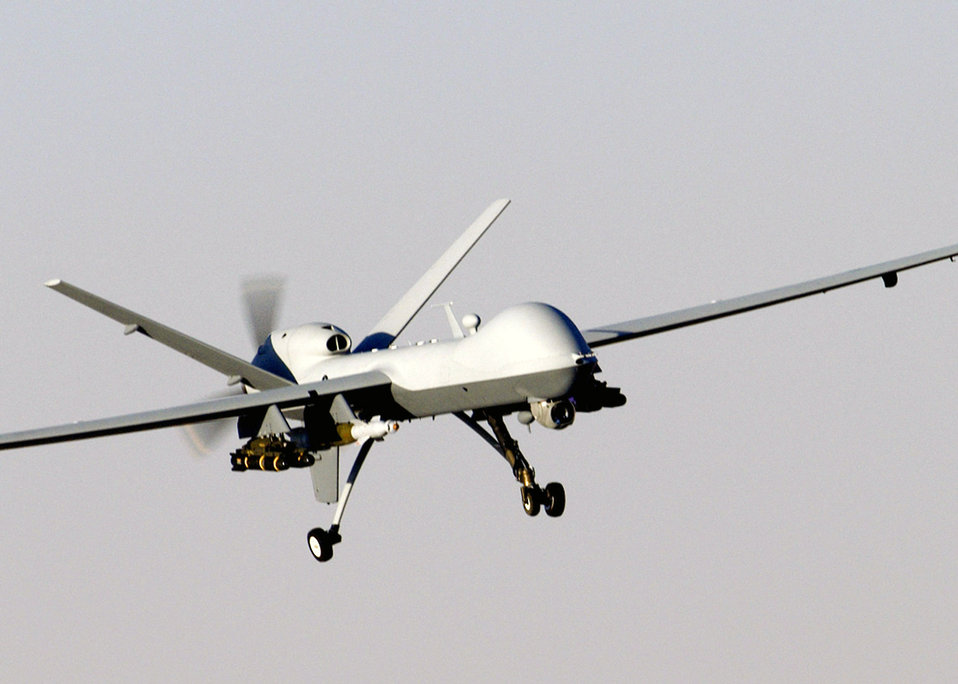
Reaper crashes in southern Afghanistan

An MQ-9 Reaper unmanned aircraft system such as this crashed July 4 in southern Afghanistan. An incident board will convene to investigate the accident.